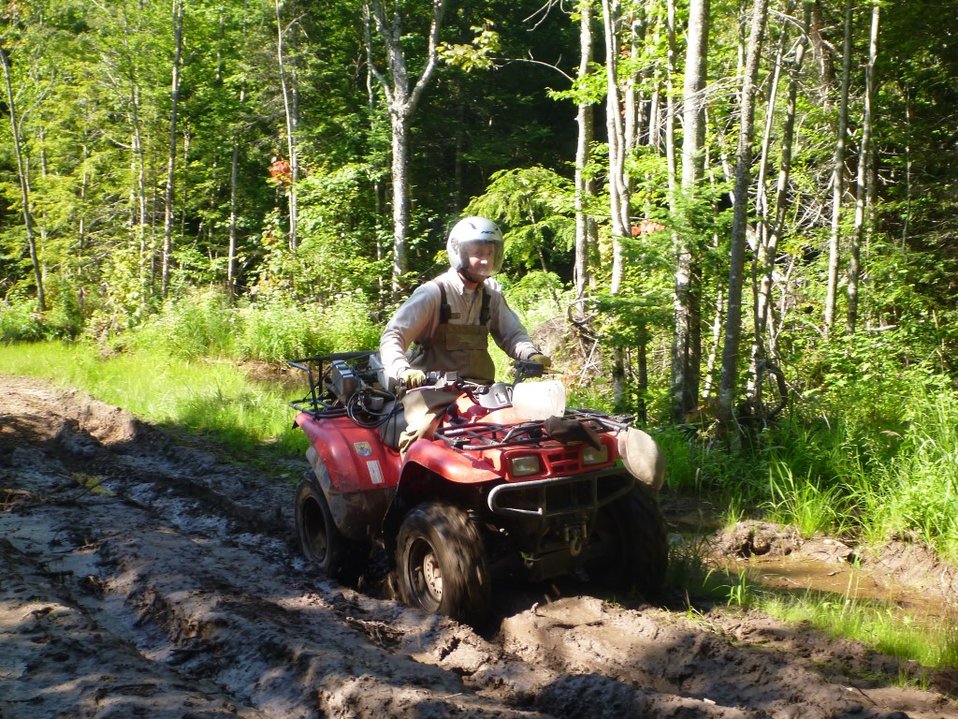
Service Employee Alex Carter ATVing to a remote larval assessment site at the West Sleeping River, Michigan.